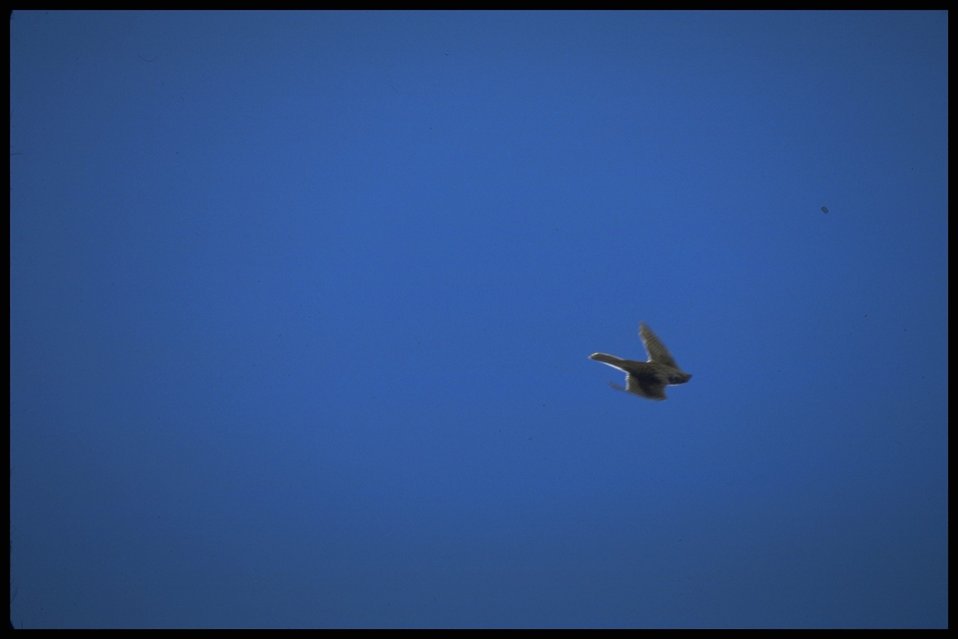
Far shot of Falcon diving. Lakeview District.